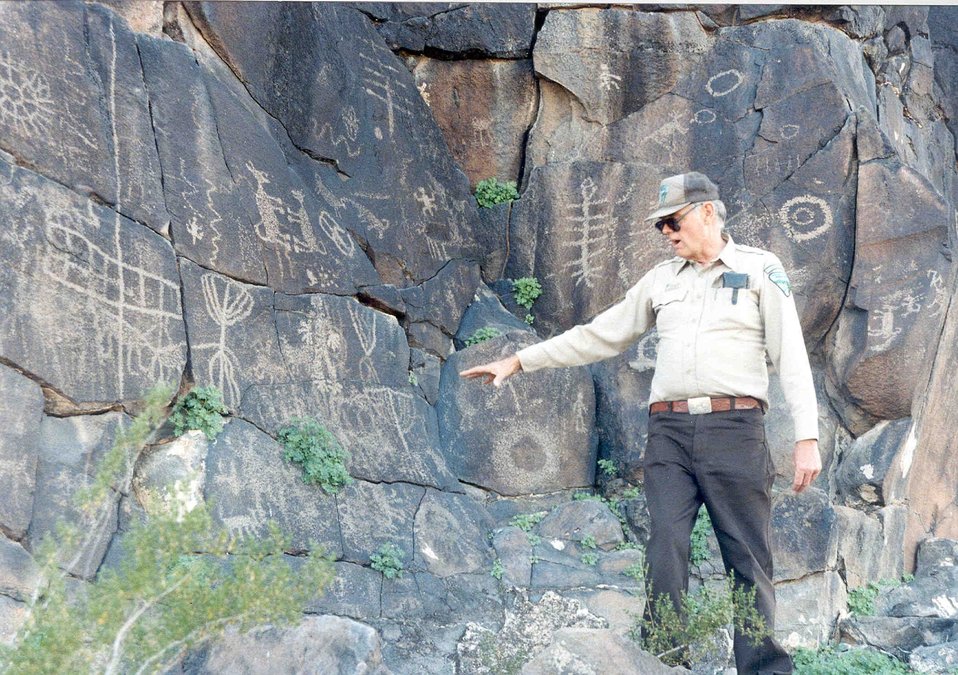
Archaeologist interpreting a petroglyph panel at Sears Point Archaeological District